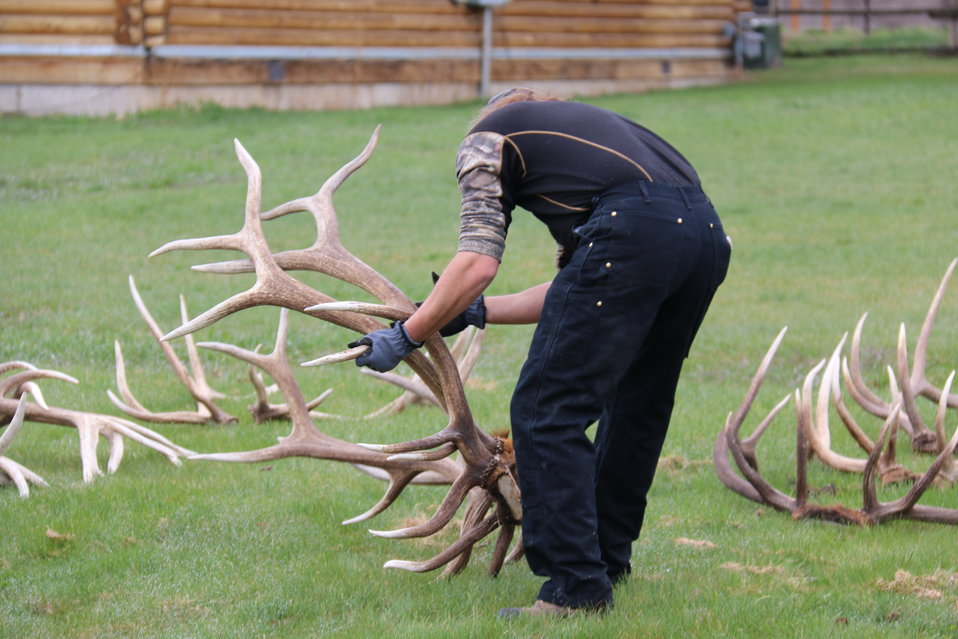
Pairing Up Matched Sets

Scout volunteers also make up matched pairs whenever possible, coveted by individuals or vendors who may resell them.